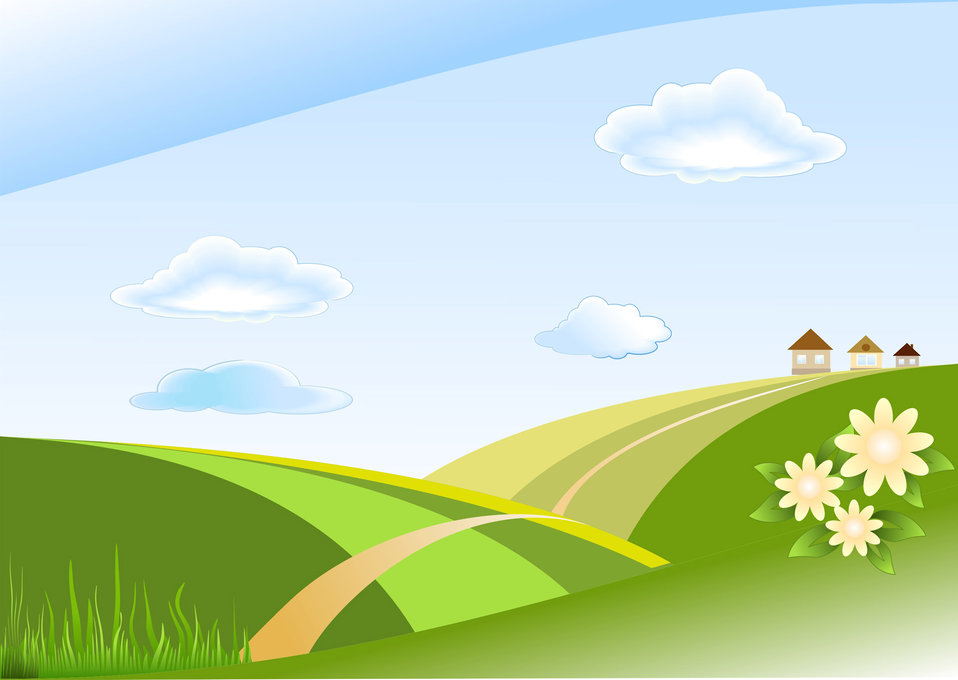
Summer day

Vector summer landscape with road through the fields and houses.